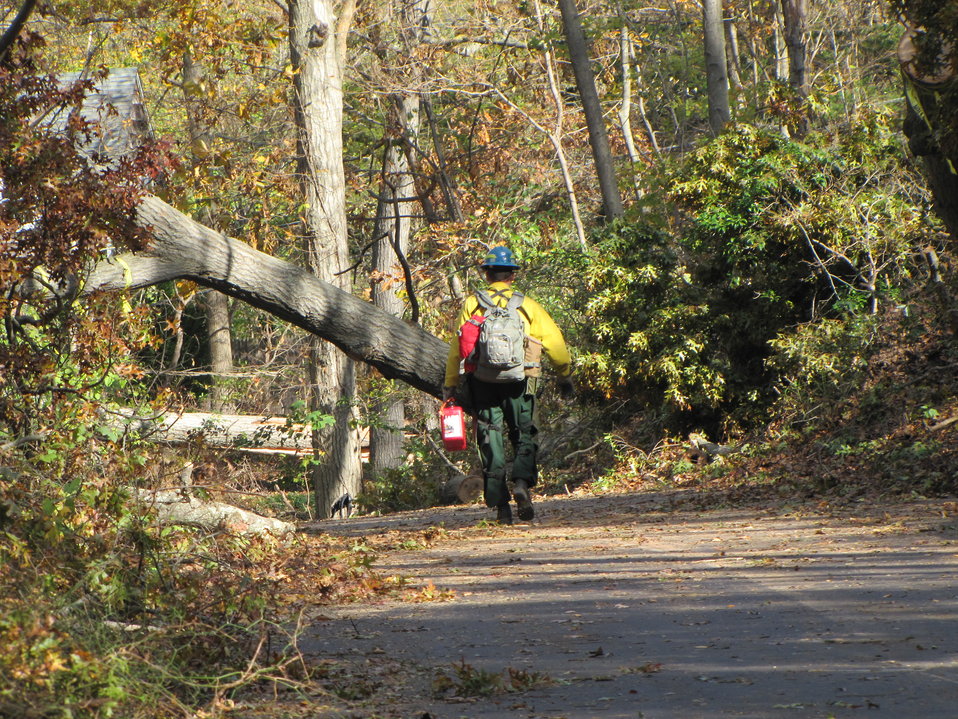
Sawyer begins day of tree clearing (NY)

Getting started on a busy day at Target Rock National Wildlife Refuge, part of the Long Island National Wildlife Refuge Complex.